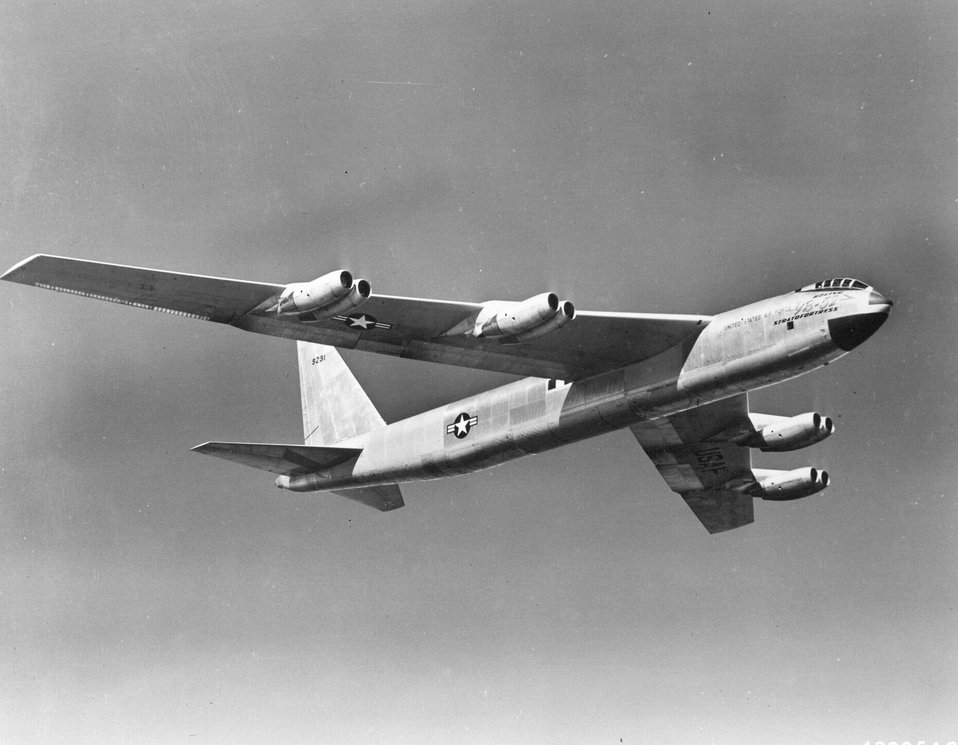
YB-52 in flight

The YB-52 flies a test mission in an undated photo.